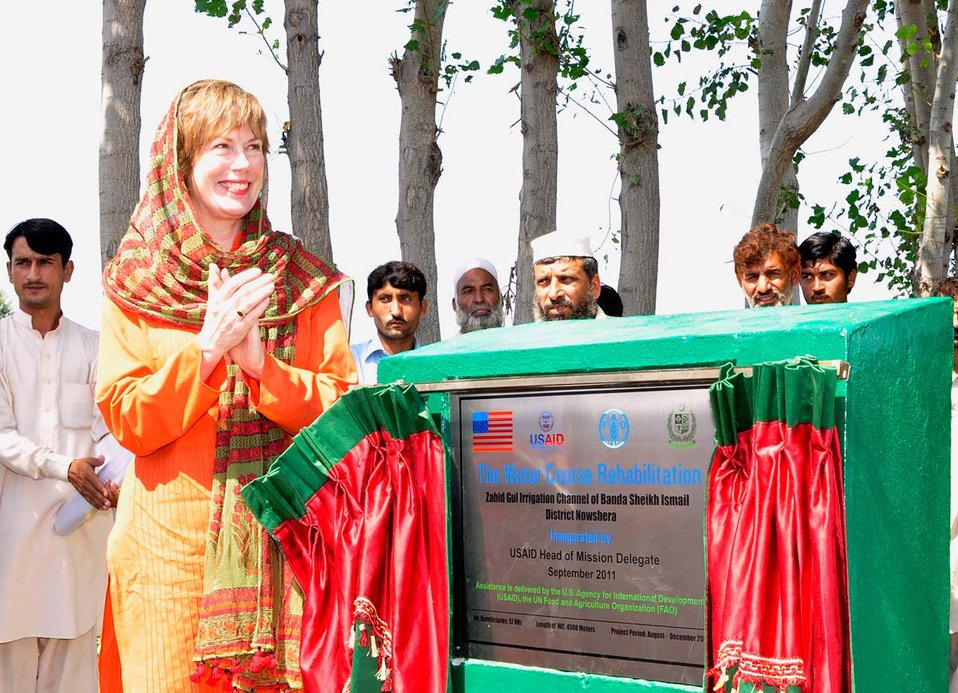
Dr. Marilyn Wyatt's Visit to the Flood-affected Farming Communities in Khyber Pakhtunkhwa